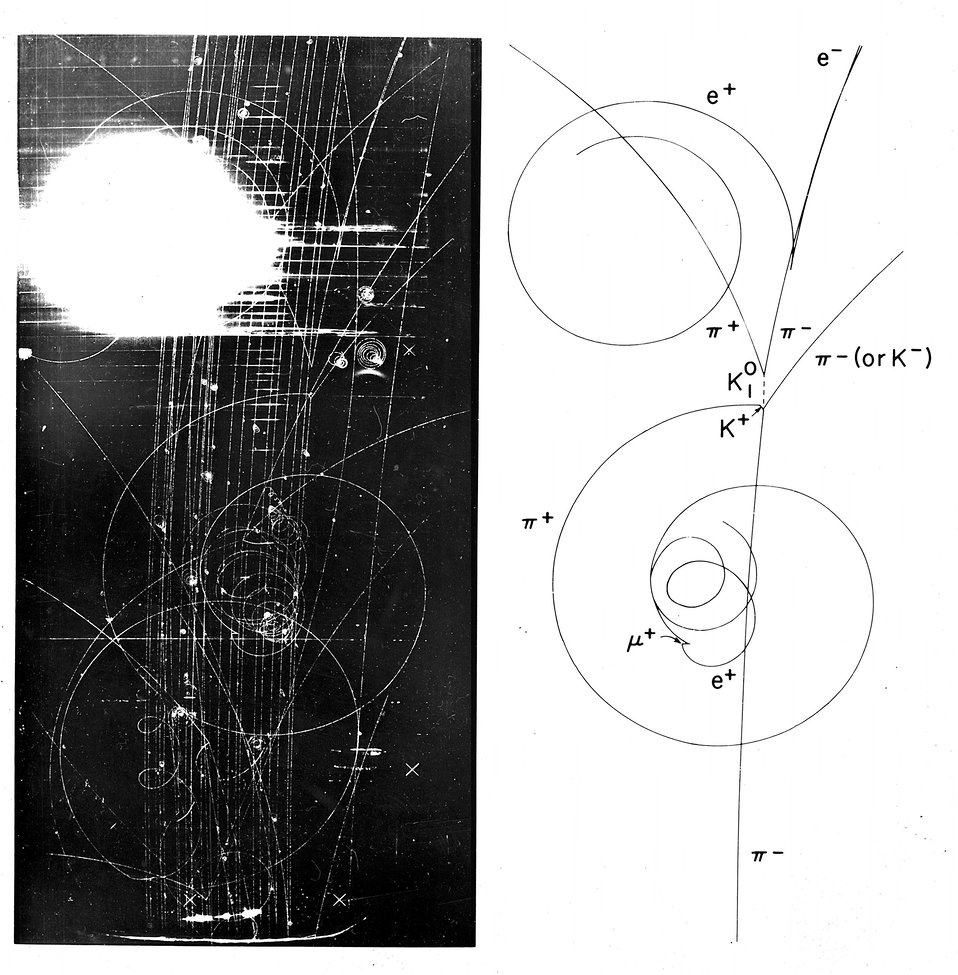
Liquid hydrogen bubble chamber photograph of a negatively-charged pi meson
interacting with a proton (hydrogen nucleus) to produce a positive K meson, a neutral
meson, shown by the dotted line, a negative meson, and a neutron, whose path is now
shown (neutral or uncharged particles do not leave tracks).